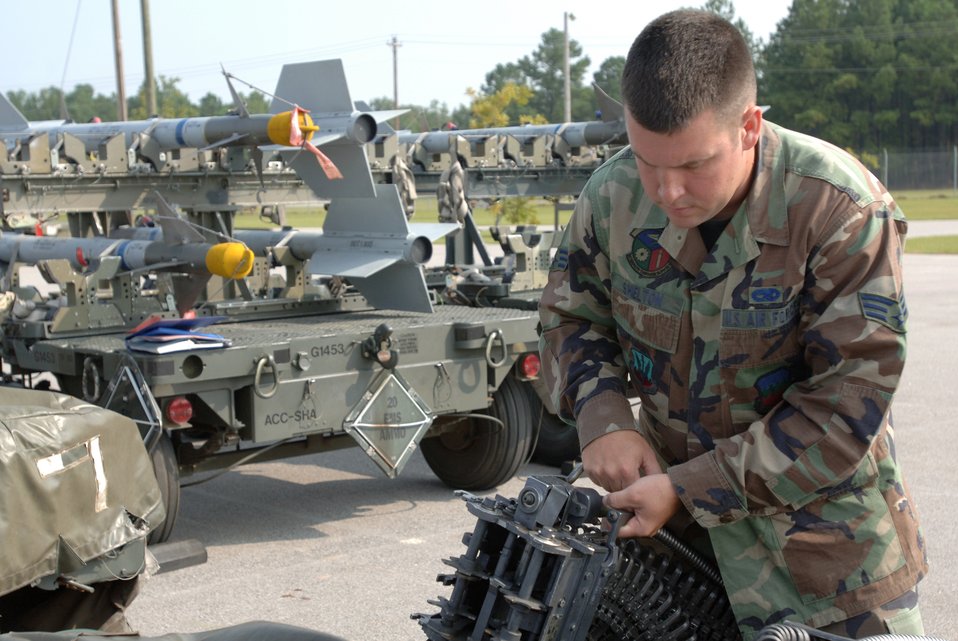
Airman checking munitions on Air Force birthday

Senior Airman Andrew Shelton inspects a universal ammunition loader Sept. 18 before loading it onto an F-16 Fighting Falcon. Airman Shelton is assigned to the 20th Equipment Maintenance Squadron at Shaw Air Force Base, S.C.